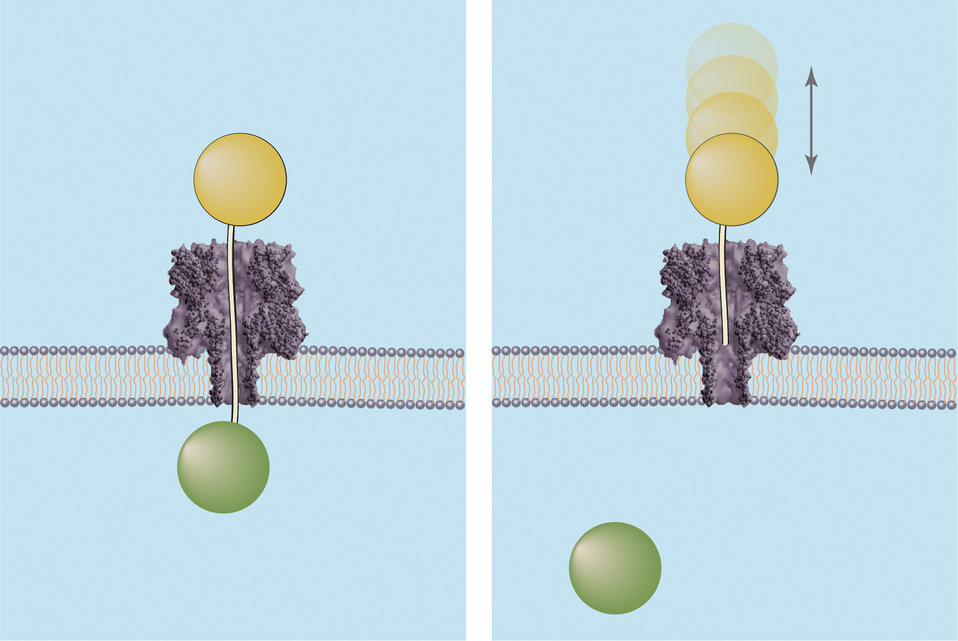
Molecular Rulers

Graphic depicting how the ice fishing method determines the distance across a membrane nanopore. Both images show DNA strands of known lengths topped by a polymer cap (orange sphere) being driven through the nanopore. If the DNA strand is long enough to completely transverse the channel (left), it will hook a circulating polymer (green sphere) on the other side of the membrane and define the nanopores length. If not long enough, the DNA probe will bounce out of the pore (right).